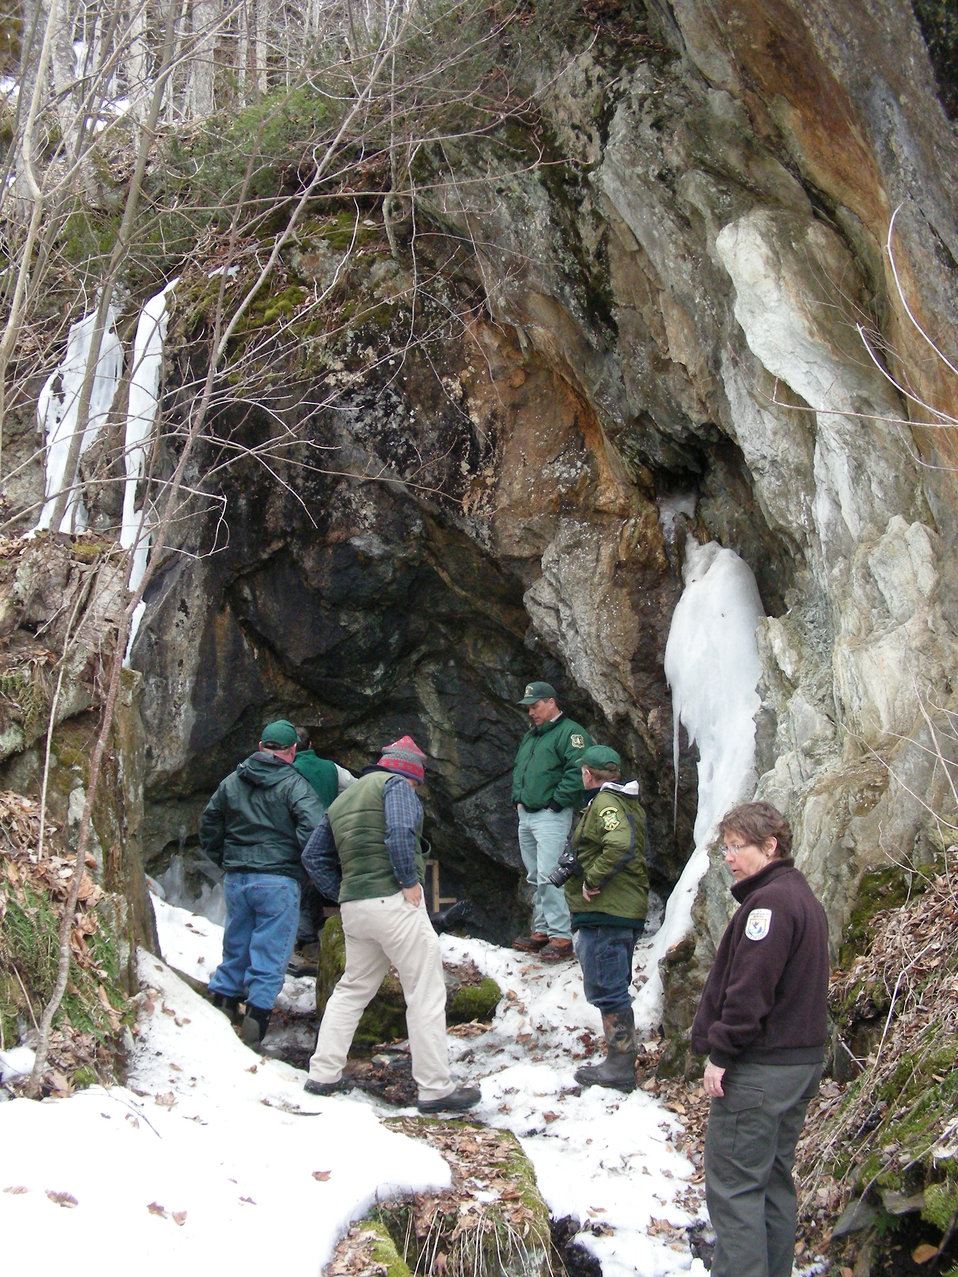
Biologists gathering outside Greeley Mine

Service and State biologists enter Greeley Mine, Vermont, March 26, 2009.